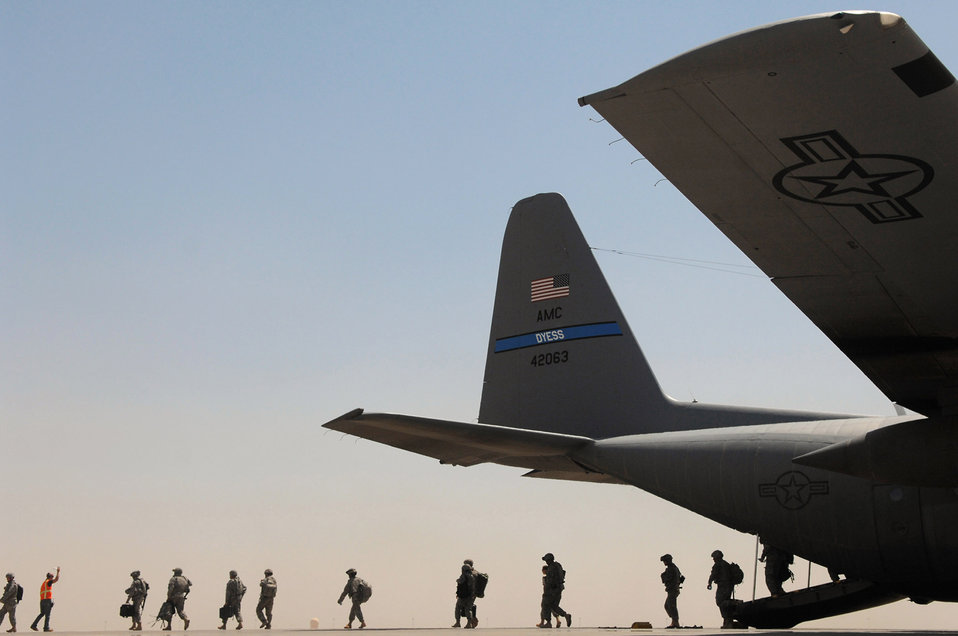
The long, safe walk

Servicemembers exit a C-130 Hercules May 10 at Balad Air Base, Iraq. The aircraft has saved lives by keeping convoy vehicles off dangerous Iraqi roads.